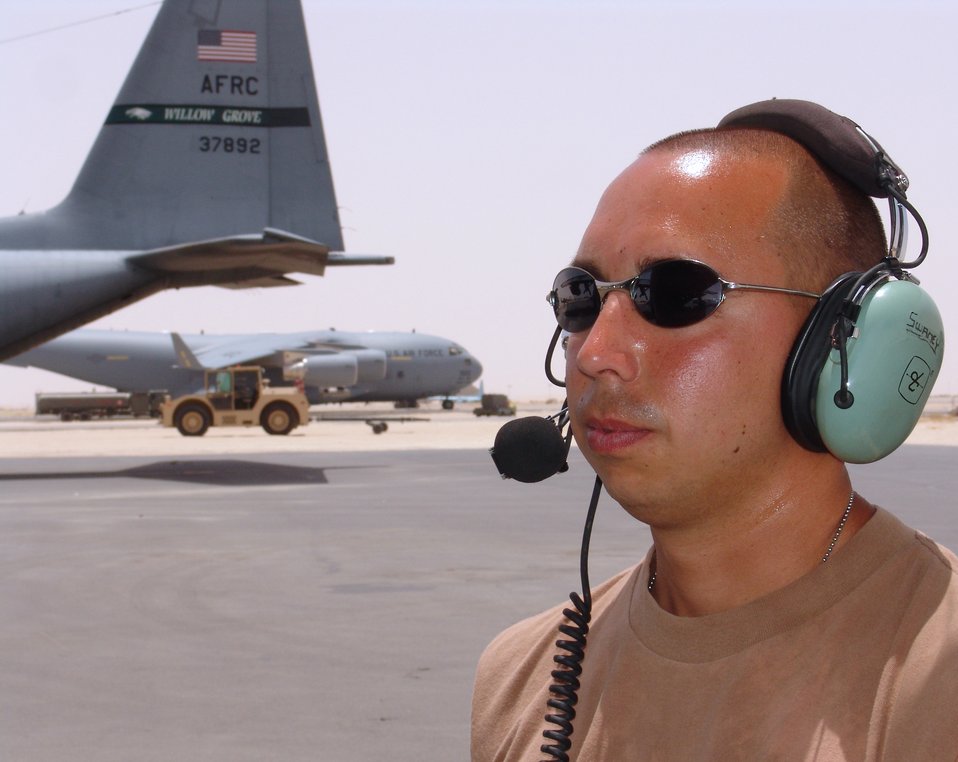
Mission time

SOUTHWEST ASIA -- Senior Airman Lee Swaney awaits the arrival of a passenger bus and pallets so he can assist in loading people and equipment destined for various bases in Iraq. He is a C-130 Hercules crew chief with the 386th Expeditionary Aircraft Maintenance Squadron at a forward-deployed location and is from Edwards Air Force Base, Calif.